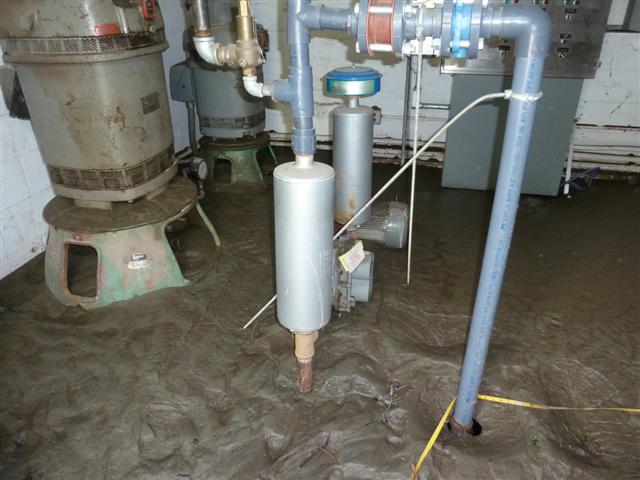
Damage at White River NFH - Bethel, VT

Storm damage at the interior pump station river intake, White River Junction NFH.